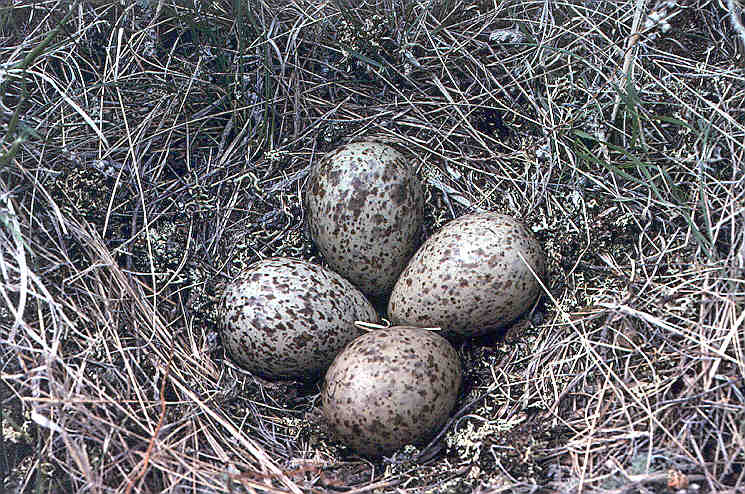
Long-billed Curlew Nest, Bowdoin NWR

Long-billed curlew nest.